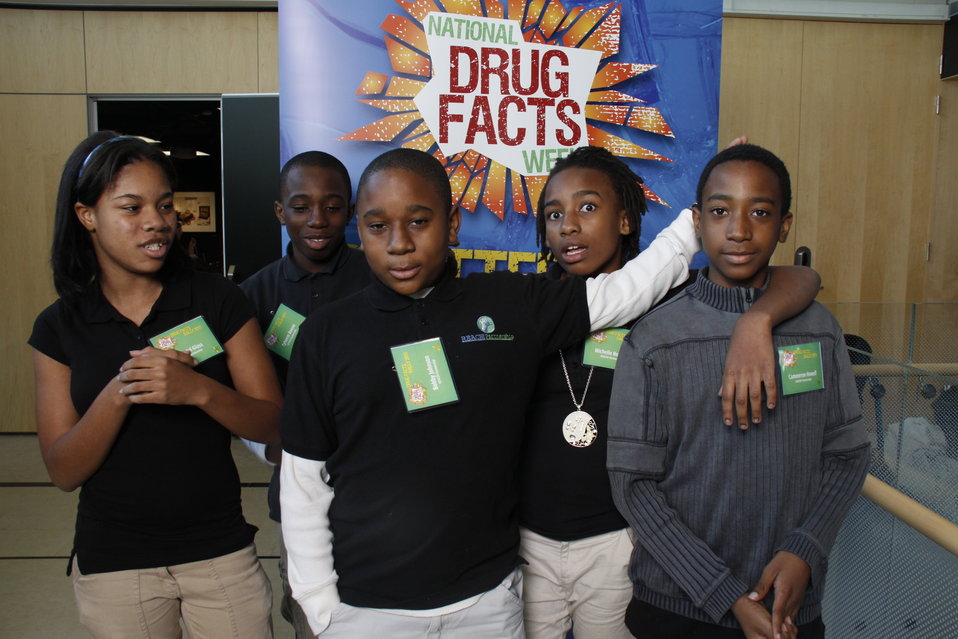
NDFW Mentor Event